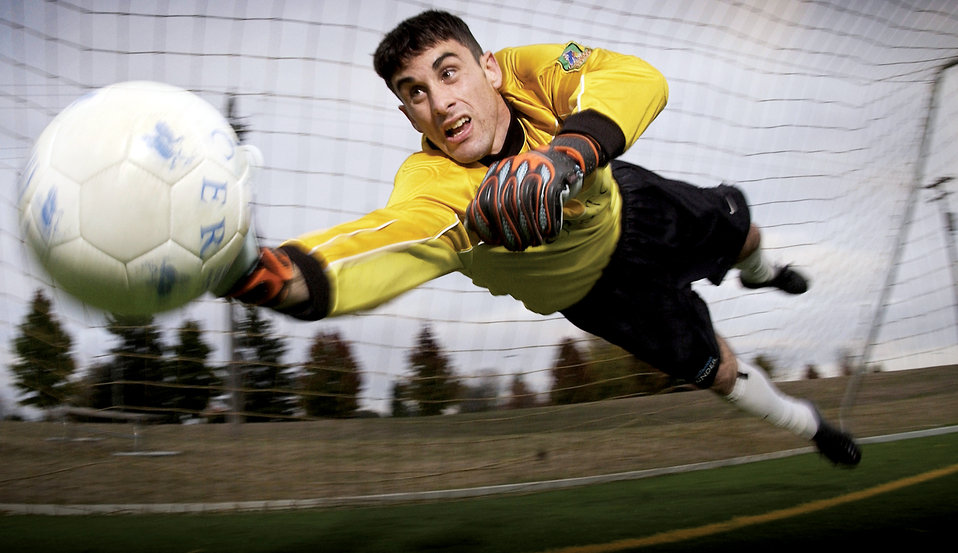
The keeper

MCCHORD AIR FORCE BASE, Wash. -- 1st Lt. Richard Cullen, a communications officer, plays goal keeper with the the Seattle Sounders, a Colorado Springs Premier Development Soccer League team. Cullen's assignment keeps him hopping at both the wing headquarters and at Seattle Memorial Stadium.